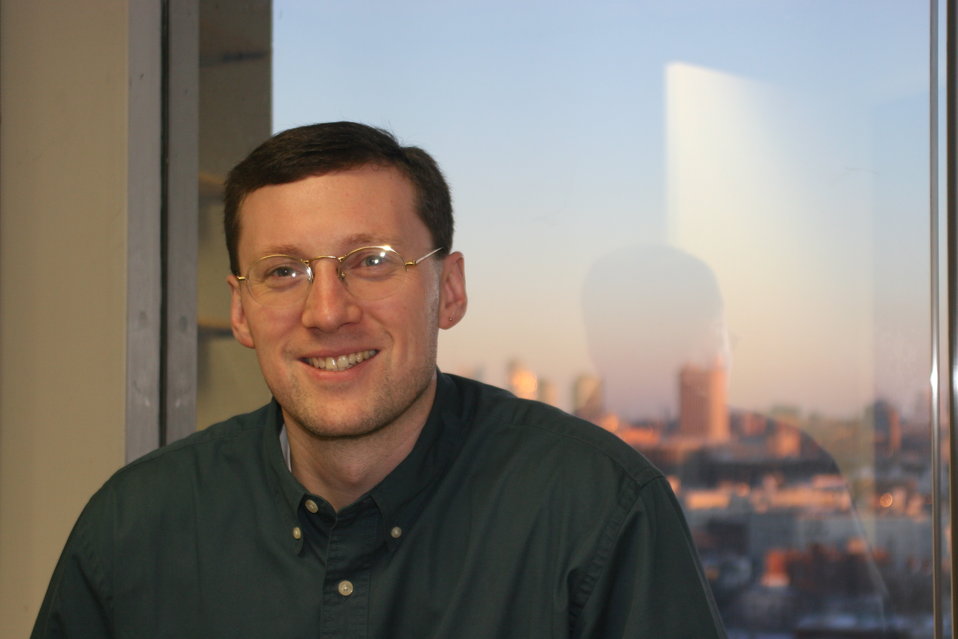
Mike Raab

Agrivida's President and co-founder Mike Raab. His company is using ARPA-E funding to develop a new method for converting plant biomass into useful feedstock for the production of bio-fuels. If successful, this project could increase domestic production of renewable bio-fuels and reduce our nation's dependence upon foreign sources of fossil fuels.